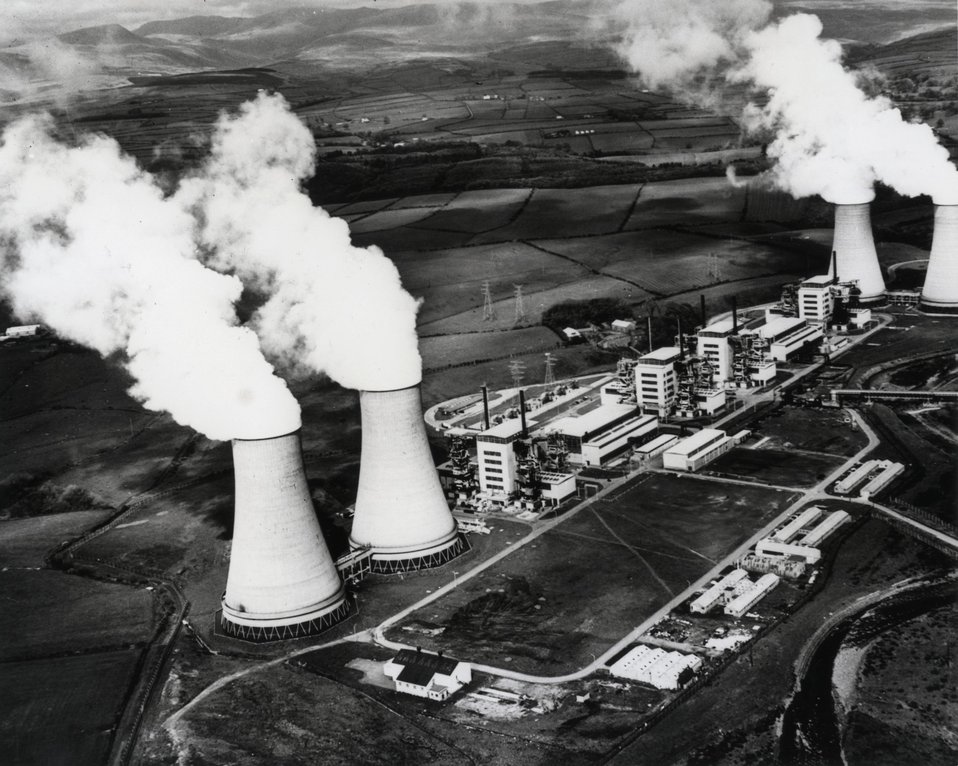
Engalnd's Calder Hall Nuclear Power Station. c. 1973